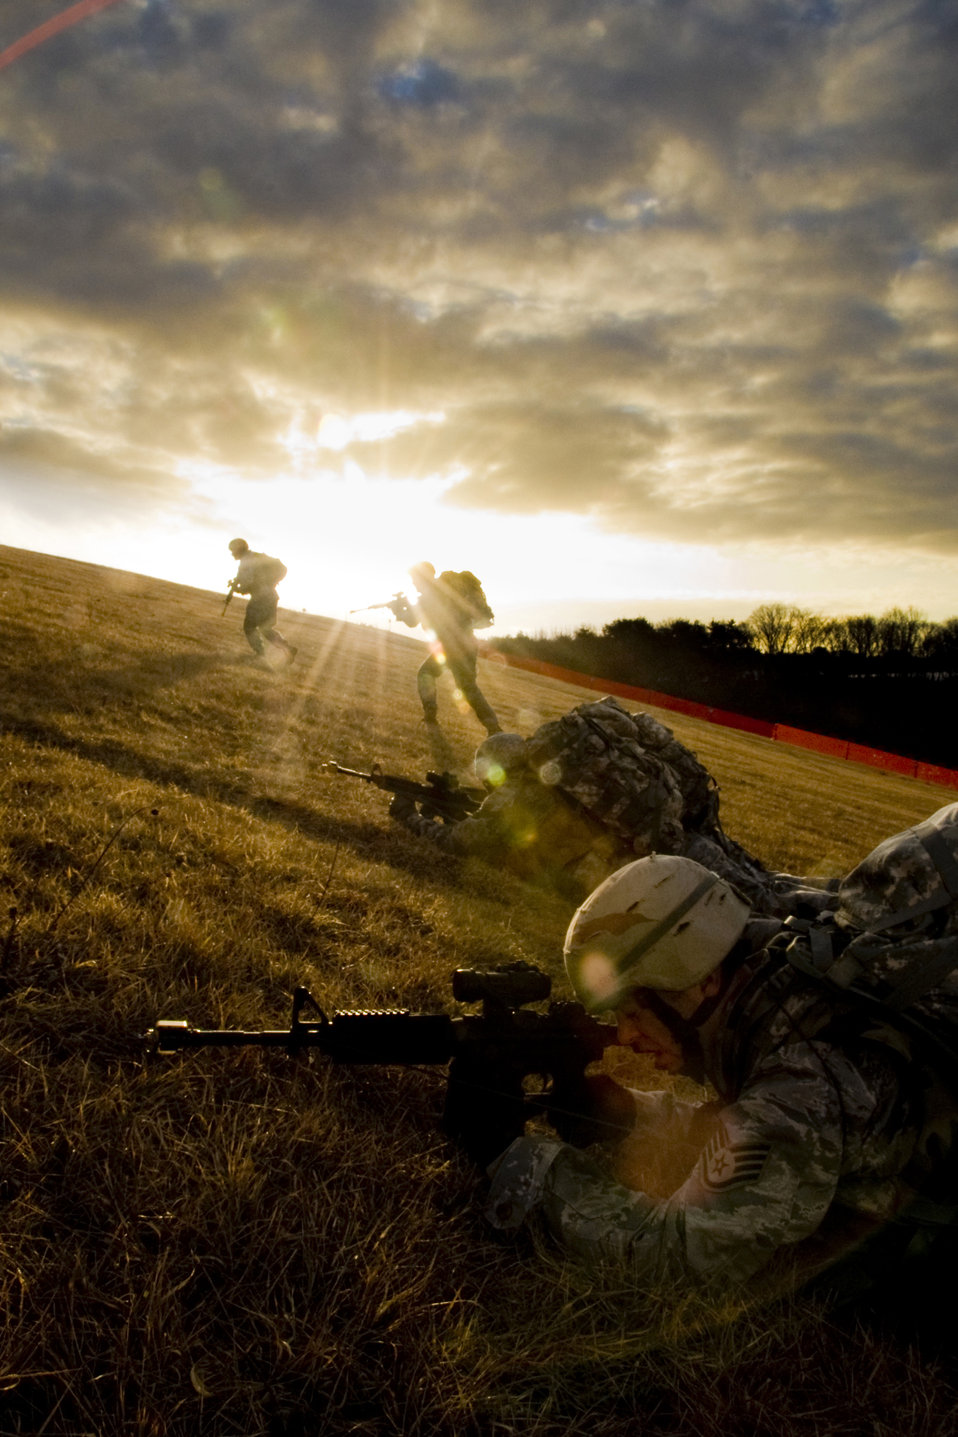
Misawa EOD unit keeps physically fit

Airmen of the 35th Civil Engineer Squadron Explosive Ordnance Disposal flight perform a bounding drill Jan. 8, 2010, at Misawa Air Base, Japan, while going uphill. The drill demonstrated a firing tactic where one group makes their way uphill, while another group engages enemy positions. The groups alternated until both reached their final position.